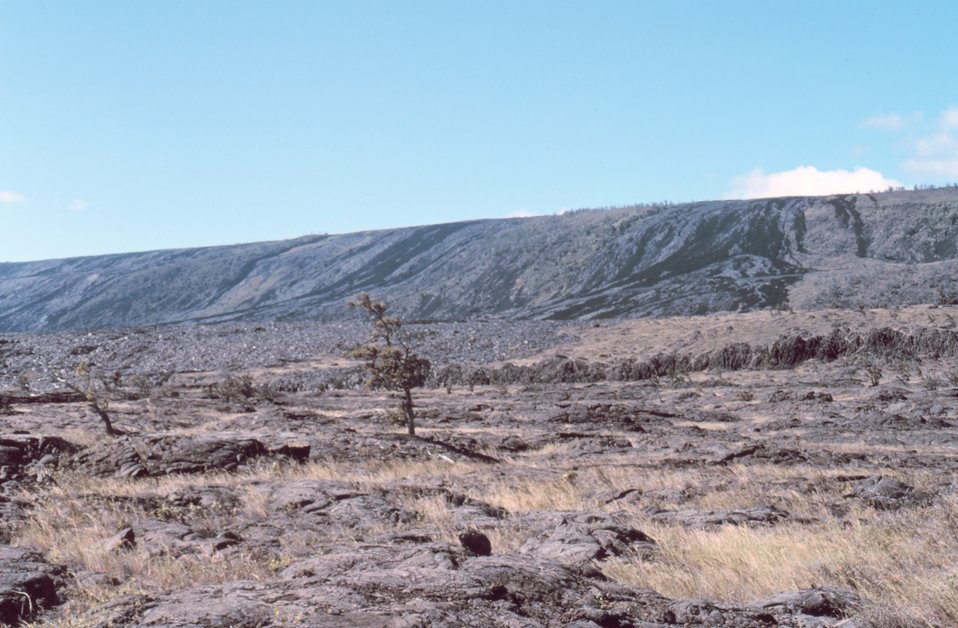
Looking at Kilauea Volcano from the coast road